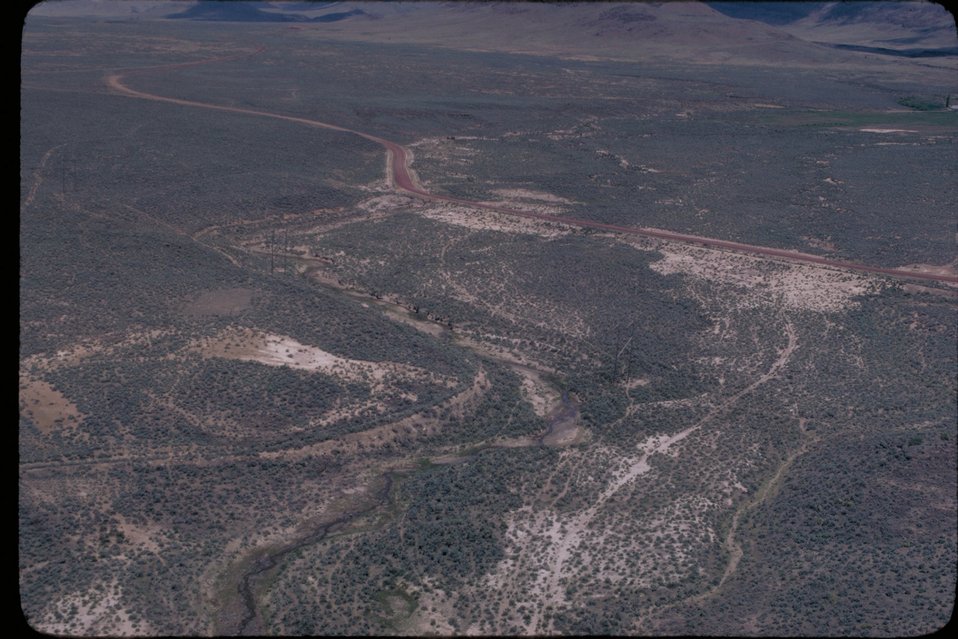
Oregon Trail Hot Creek Lower Snake River District